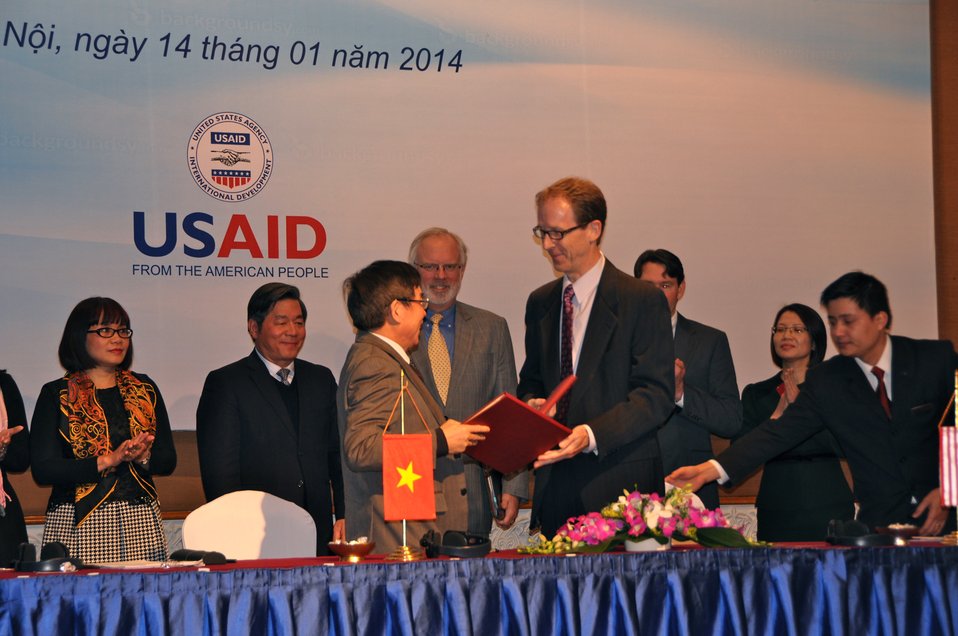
USAID and Vietnam’ Ministry of Justice sign an MoU to begin USAID’s new Governance for Inclusive Growth program.